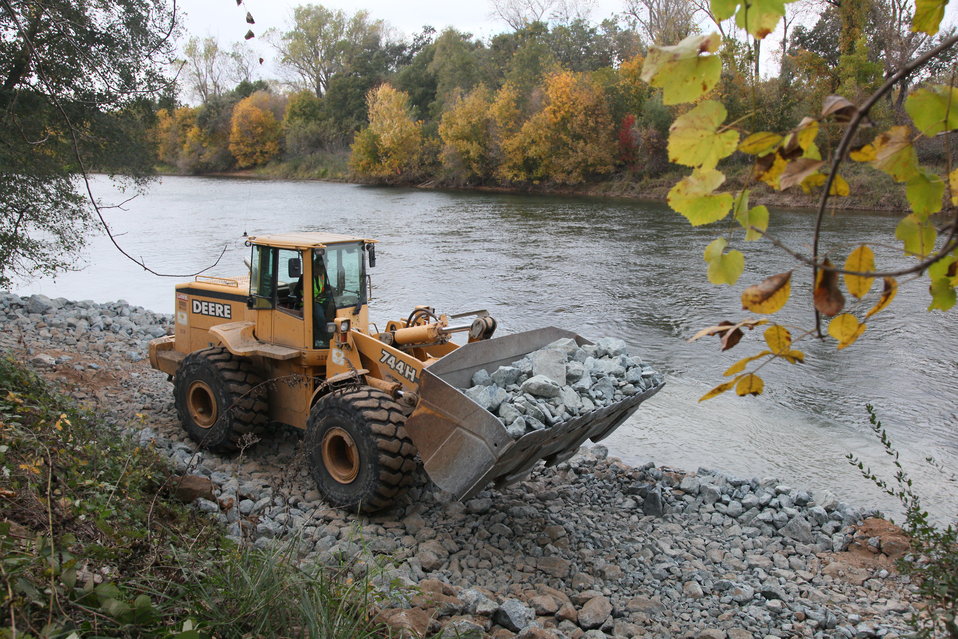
Large rock called rip-rap is moved closer

Large rock called rip-rap is dispersed at critical erosion site under repair along the American River’s south bank near Watt Avenue in Sacramento, Calif., Nov. 18, 2011. After the rock is placed below and above the water line, crews will add sturdier soil and native plantings along the bank. The work is part of the ongoing Sacramento River Bank Protection Project to repair erosion, levees and reduce flood risk for the Central Valley. (U.S. Army photo by Michael J. Nevins/Released)
Project Map: bit.ly/rOlS5K